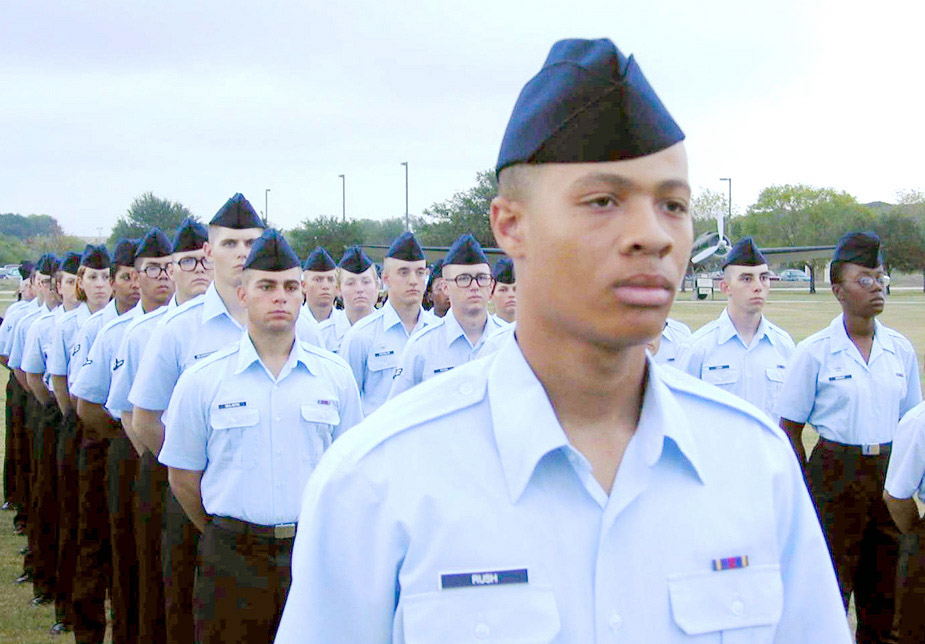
34,000th Graduate

LACKLAND AIR FORCE BASE, Texas -- Airman Basic Wendell Rush stands in front of his fellow airmen prior to basic military training graduation here Oct. 6, 2000. Rush, of Centralia, Ill., signed the 34,000th enlistment contract of fiscal 2000 in July, signifying the Air Force's attainment of its recruiting goal. The Air Force eventually surpassed its goal, sending 34,369 new airmen to basic training.